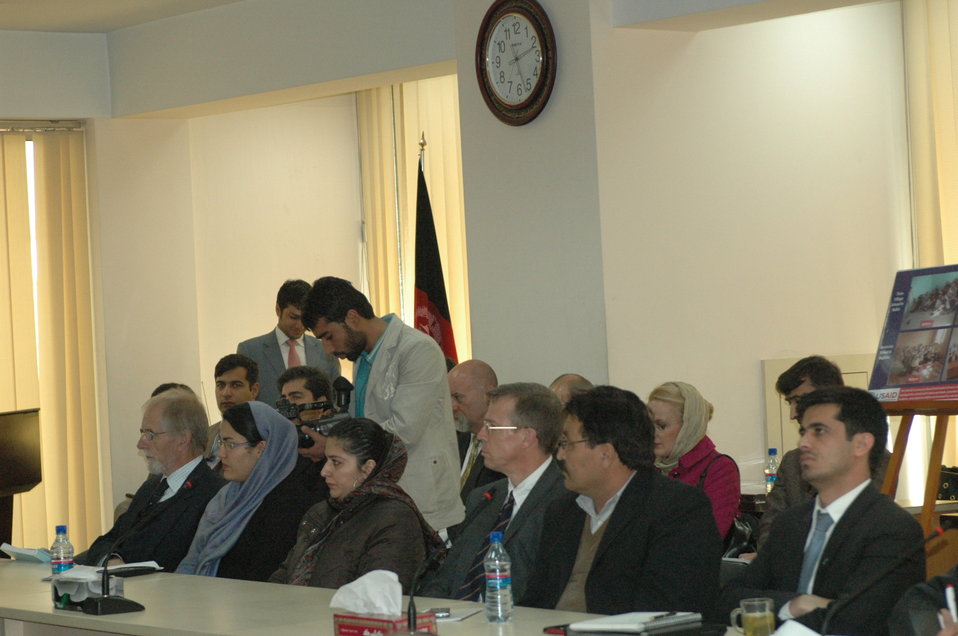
Community Based Stabilization Grants Ceremony, December 7, 2010